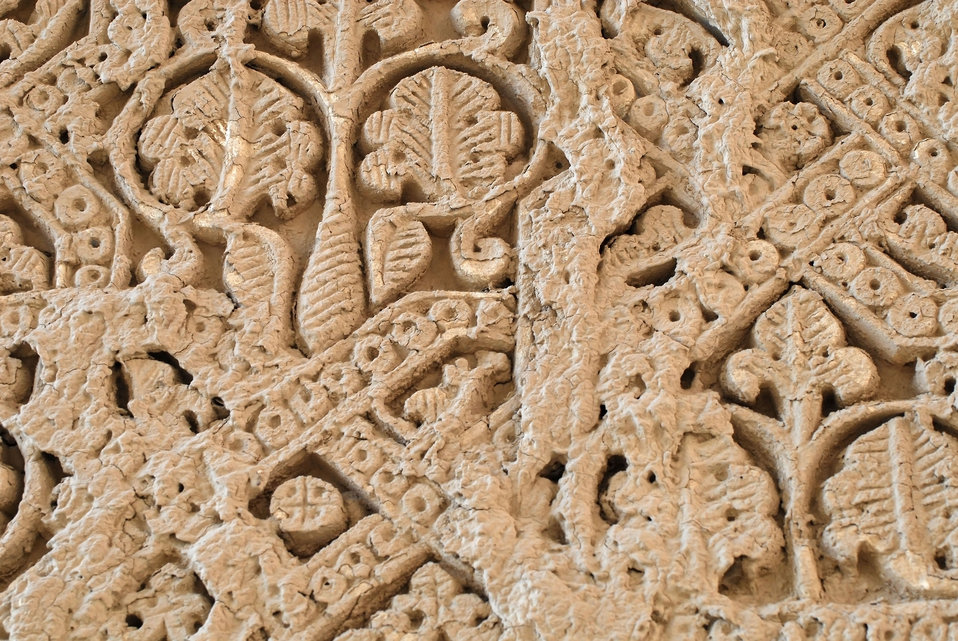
'On the Road' in Balkh Province